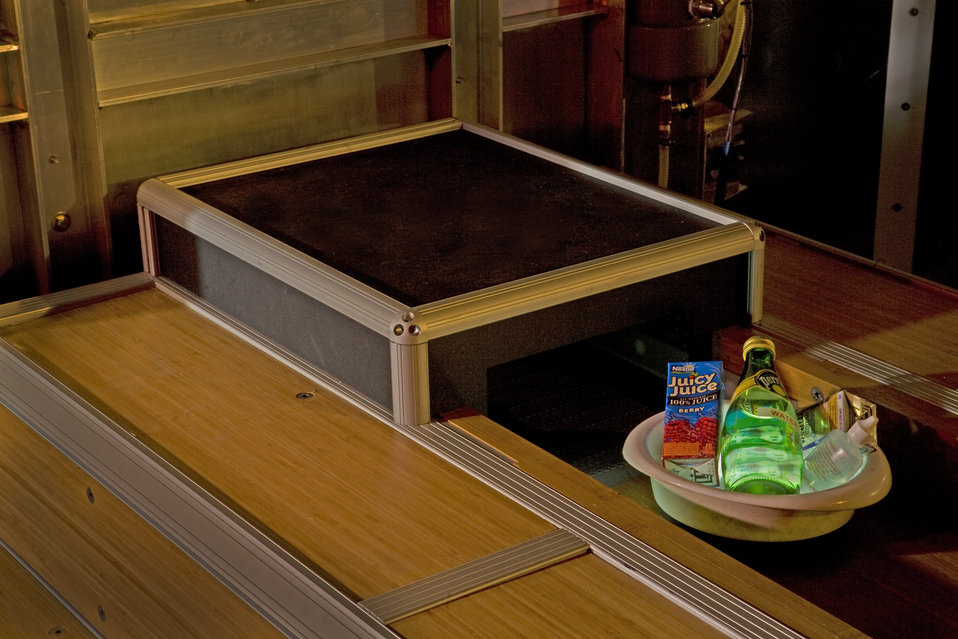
THE MAGVIZ TEAM AT LANL PIONEERED THE USE OF MODIFIED MAGNETIC RESONANCE IMAGERY (MRI) TECHNOLOGY TO DISTINGUISH AND ALERT AIRPORT SECURITY STAFF TO POTENTIALLY DANGEROUS LIQUIDS AND GELS IN AIRPORT CARRY-ON BAGGAGE.

Using extremely low magnetic fields and high-powered computer analysis, the MagViz equipment was demonstrated for its Department of Homeland Security sponsors and potential Transportation Safety Administration users at the Albuquerque International Sunport. A new area of development is a bottled-liquid scanner system based on the same technology.